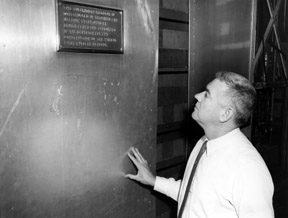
Robert Nobles, twenty years after he participated in the CP-1 experiment.